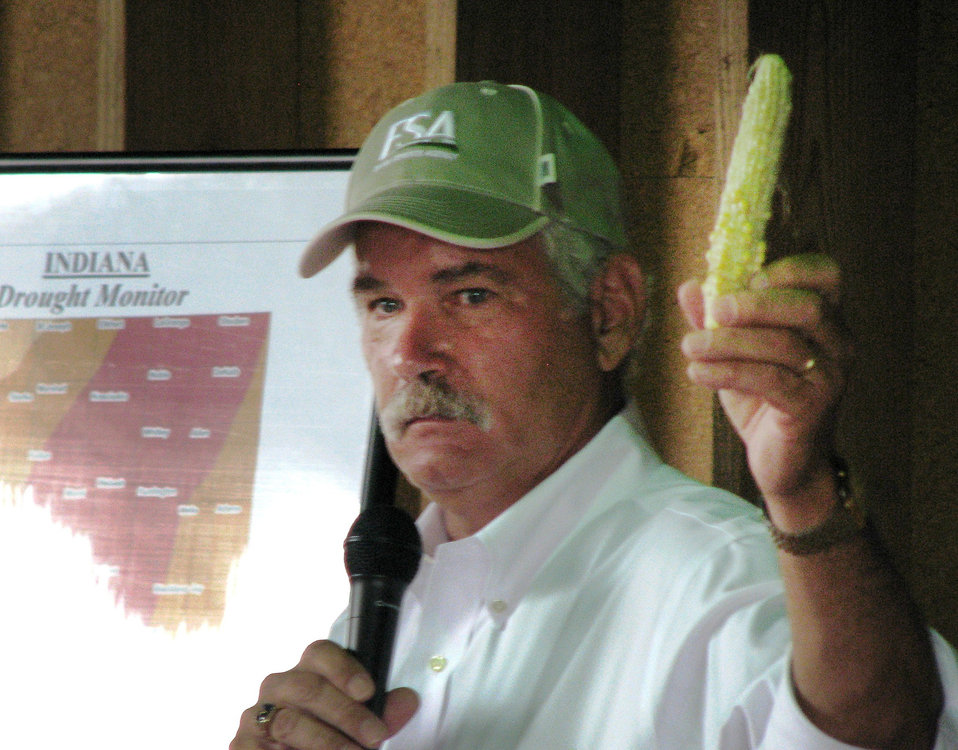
Agriculture Under Secretary for Farm and Foreign Agriculture Service (FFAS) Michael Scuse demonstrates the droughts impact on corn development at a public meeting in Whiteland, IN on Thursday, July 19, 2012. Agriculture Secretary Vilsack has instructed Agriculture subcabinet leaders to travel to affected drought areas to augment ongoing assistance from state-level U.S. Department of Agriculture (USDA) staff and provide guidance on USDA’s new, streamlined disaster process. The U.S. Drought Monitor currently reports that 61 percent of the continental United States is in a moderate to exceptional drought.